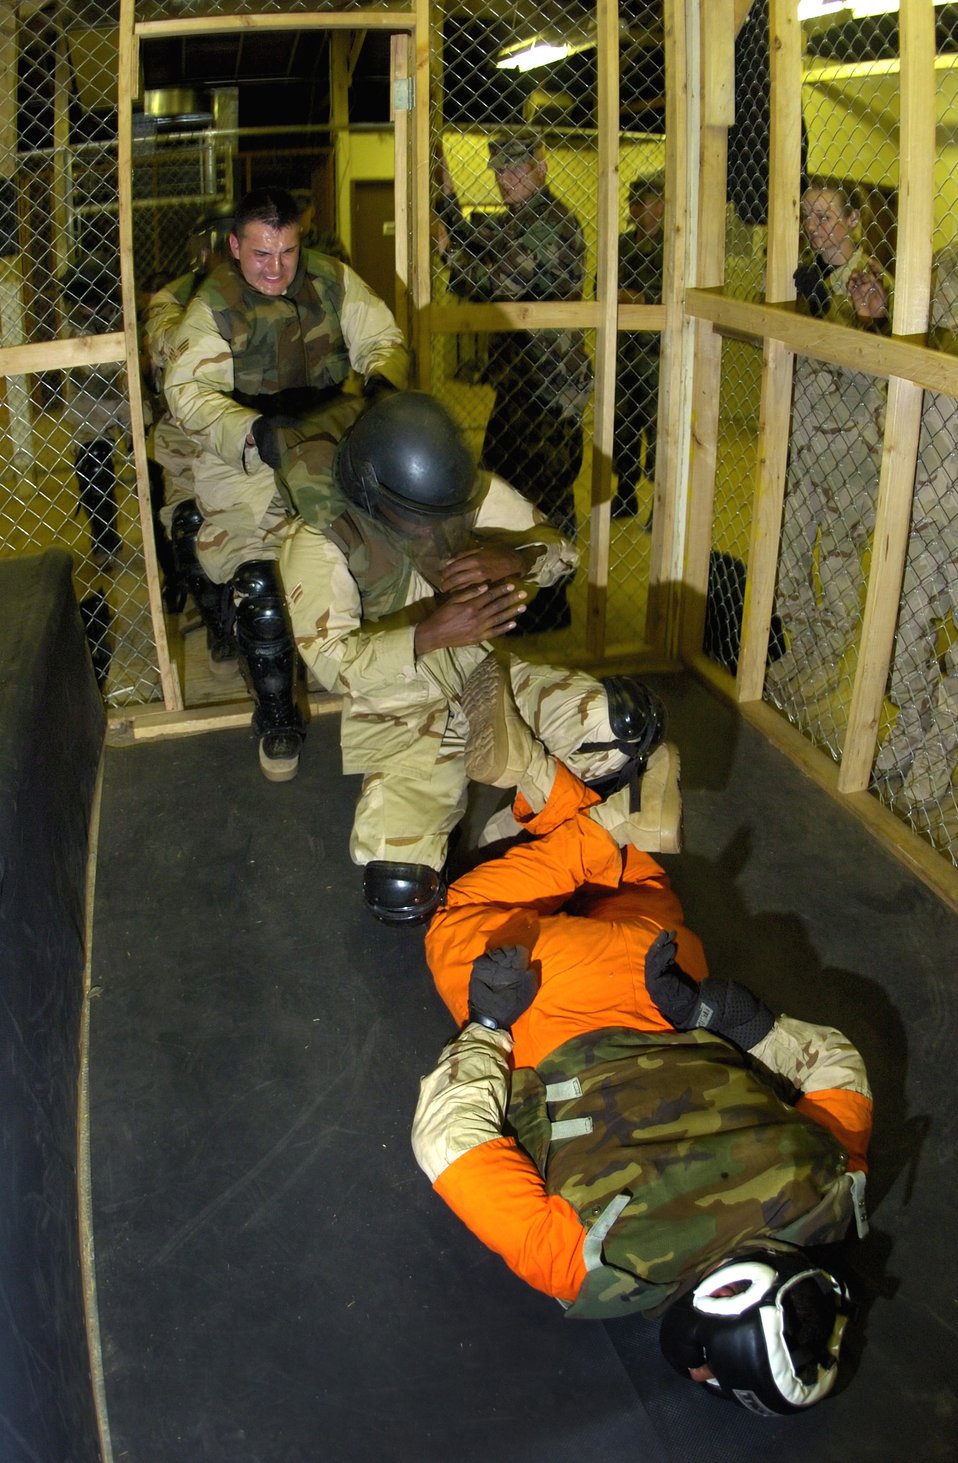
Learning detainee operations

FORT LEWIS, Wash. -- Airmen practice proper techniques during a detainee operations training class here. Trainees are taught how to correctly enter and leave a cell while safely controlling either a hostile or compliant detainee. The class teaches Airmen how to humanely care for and control detainees.